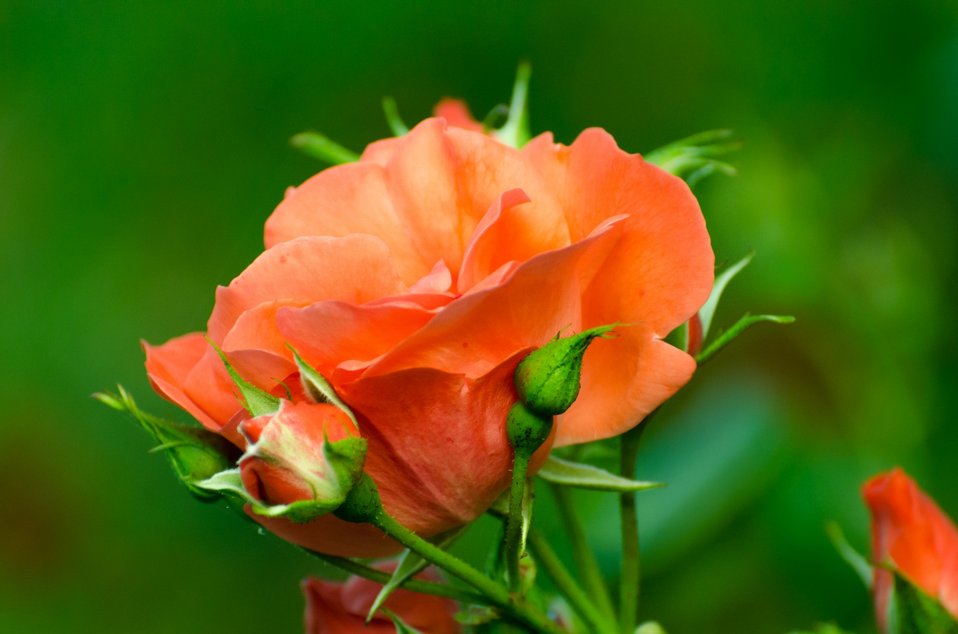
Flower - close up.